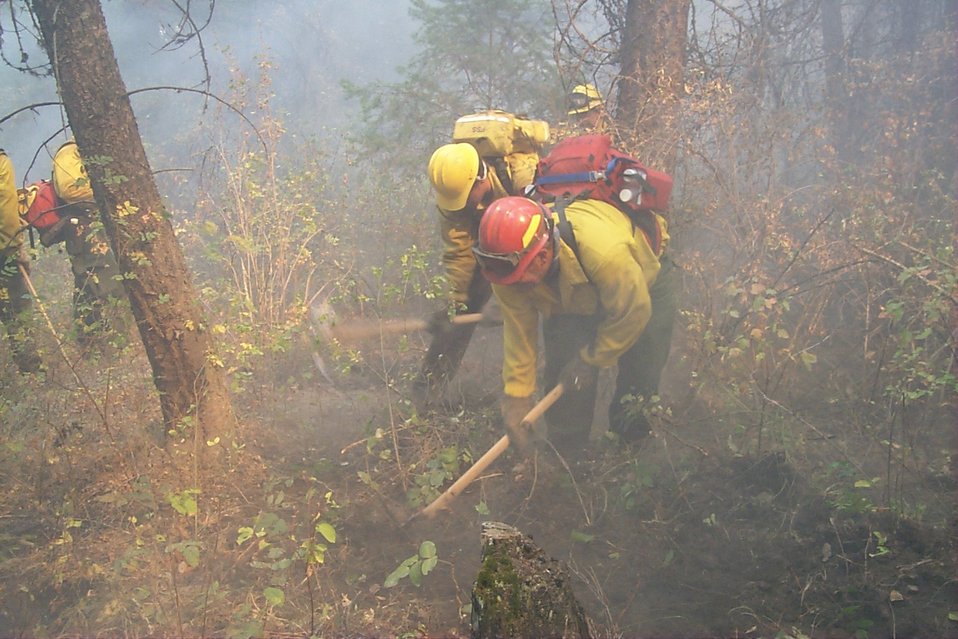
Line crew Fire Clearwater Fire Salmon Field Office USRD Upper Snake River District